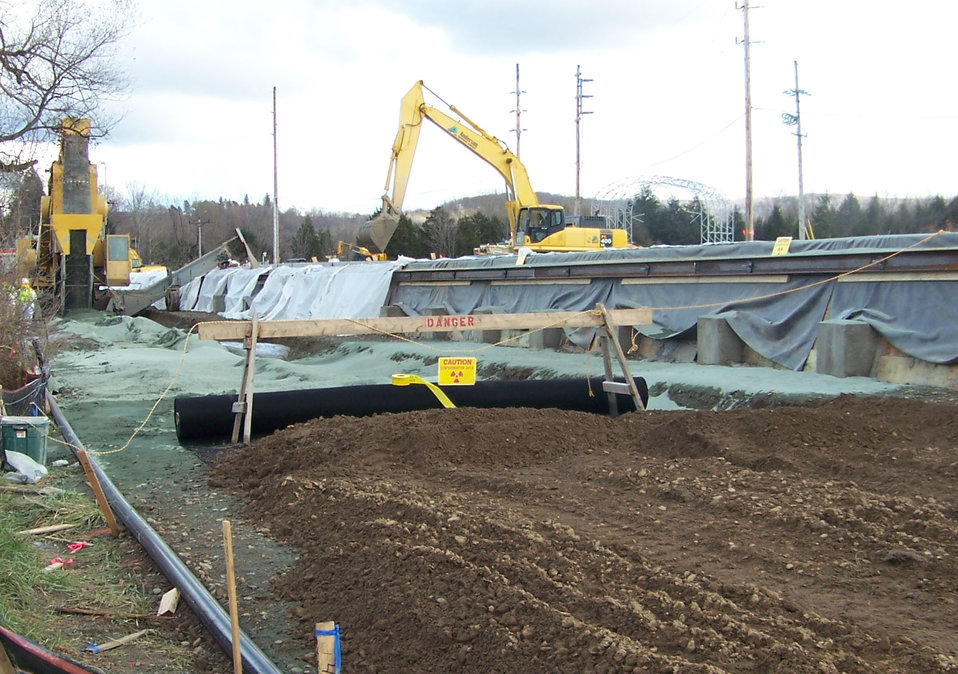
Installation of Treatment Wall to Remove Contamination from Groundwater at West Valley is Completed

On November 18, crews completed the installation of the 850-foot-long trench that will be used to remove radioactive Strontium-90 (Sr-90) from the groundwater at the West Valley Demonstration Project in New York State.